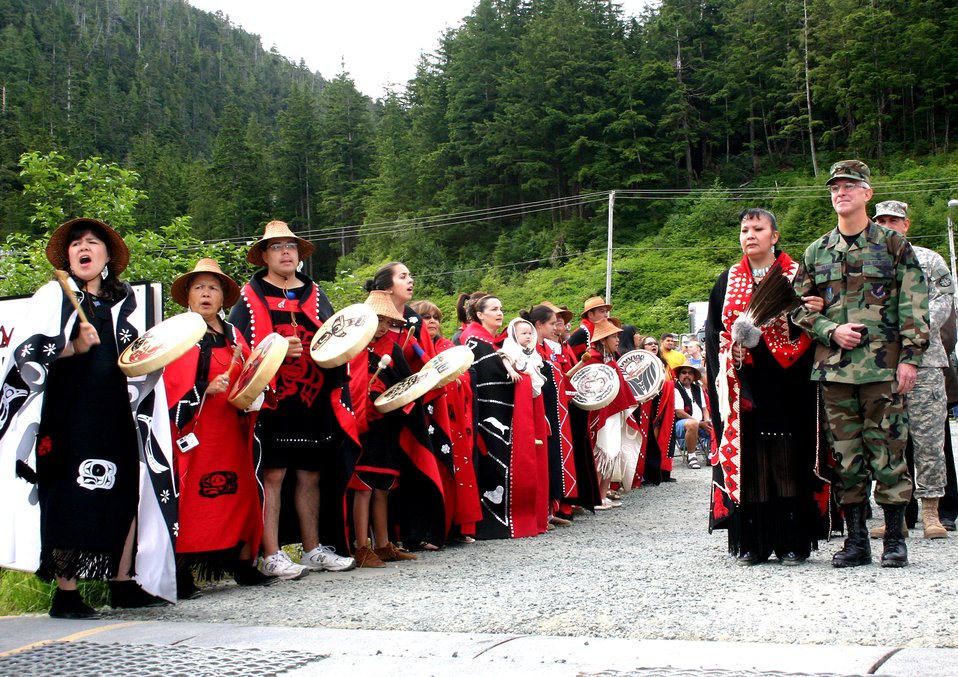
Big month for small Alaska town

Lt. Gen. Douglas Fraser leads the procession of military officials and Metlakatla Indiana Community councilmen to the ferry to meet Sen. Ted Stevens. General Fraser is the commander of Alaskan Command.